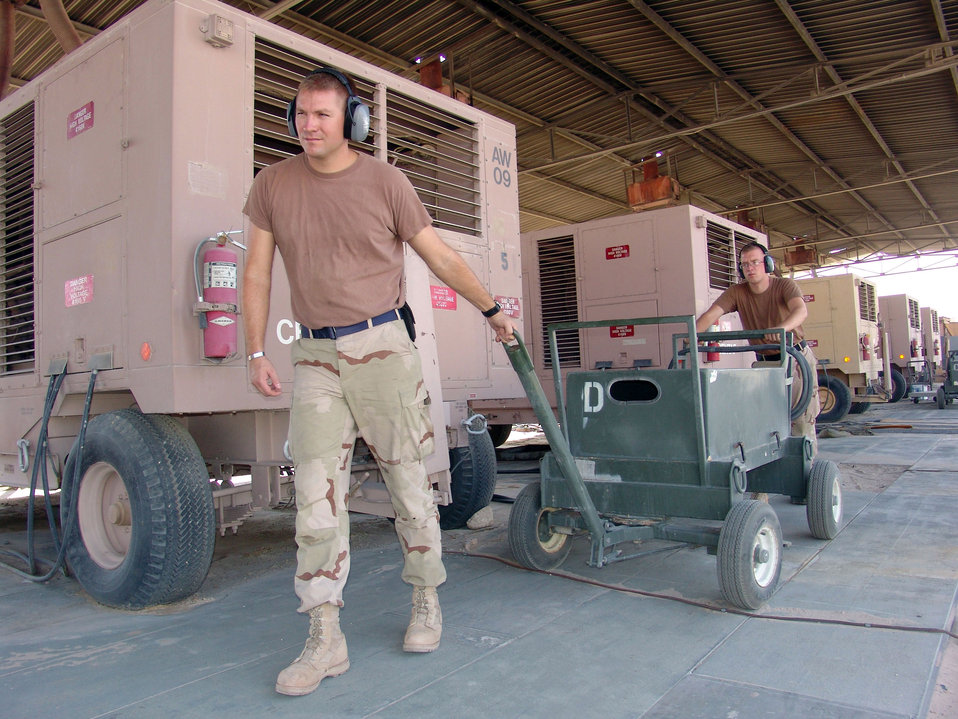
Desert duty

SOUTHWEST ASIA -- Staff Sgt. Deryck Parks (left) and Airman 1st Class Joseph Buckland reposition a battery start cart. This cart is used to start diesel engines on the generators. The Airmen are assigned to the 386th Expeditionary Civil Engineer Squadron at a forward-deployed location. Sergeant Parks is deployed from Little Rock Air Force Base, Ark., and Airman Buckland is deployed from Malmstrom Air Force Base, Mont.